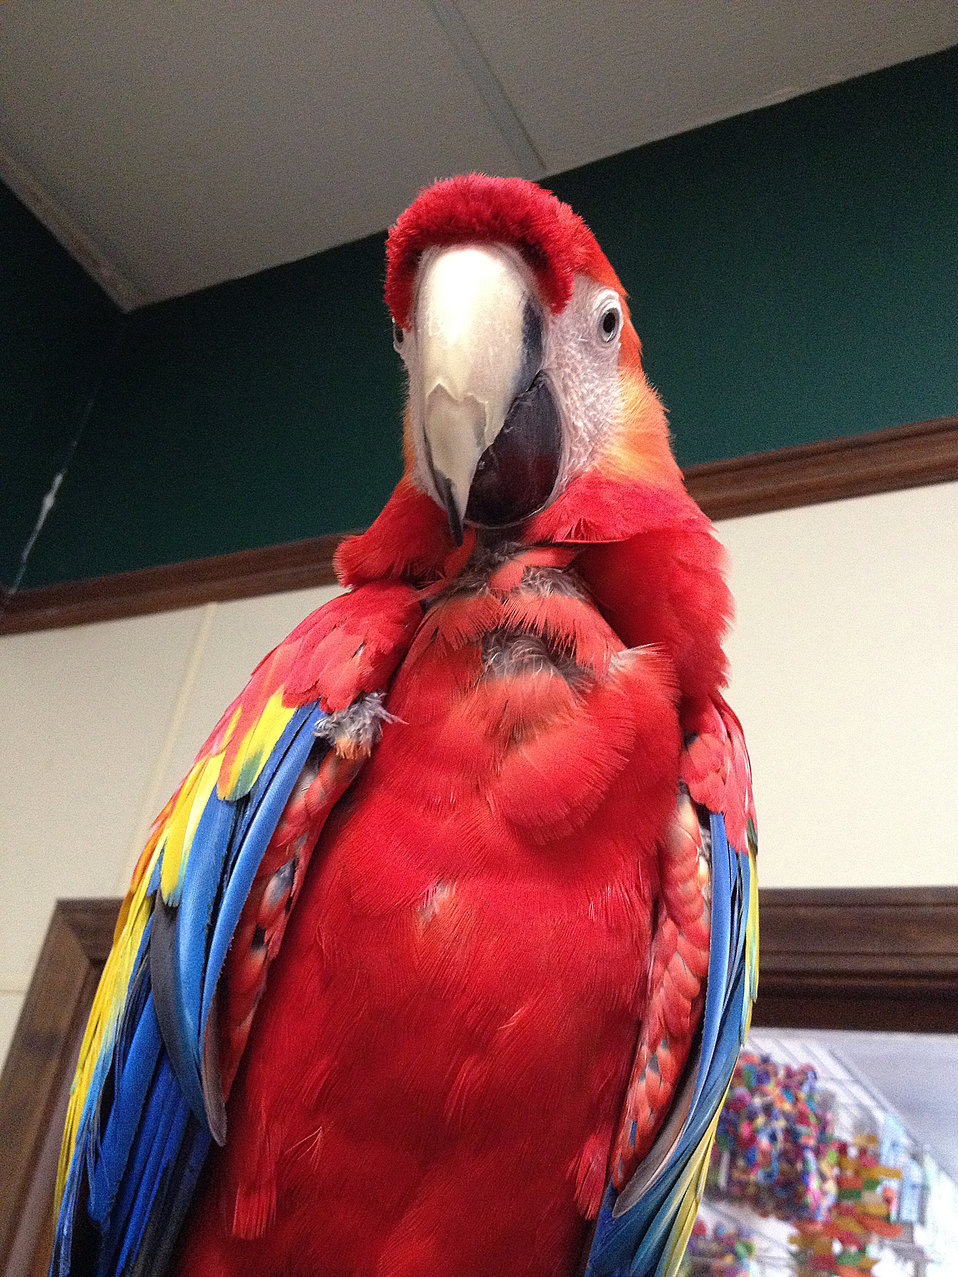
This image depicts a beautifully-colored adult parrot known as a Scarlet Macaw, or Aracanga, Ara macao, which can be found in its native habitat of the tropics of the Americas.